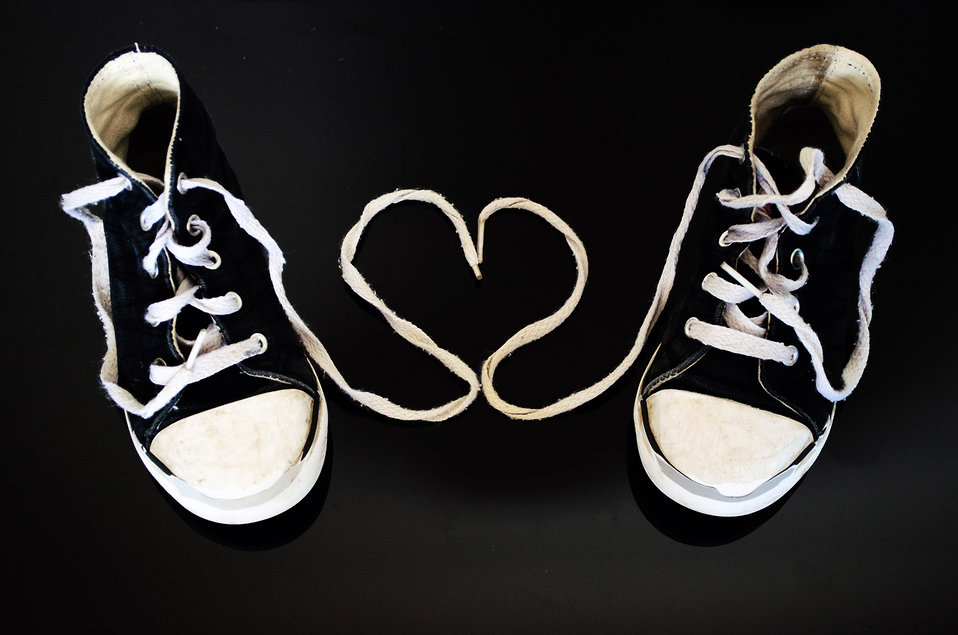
Forever together.